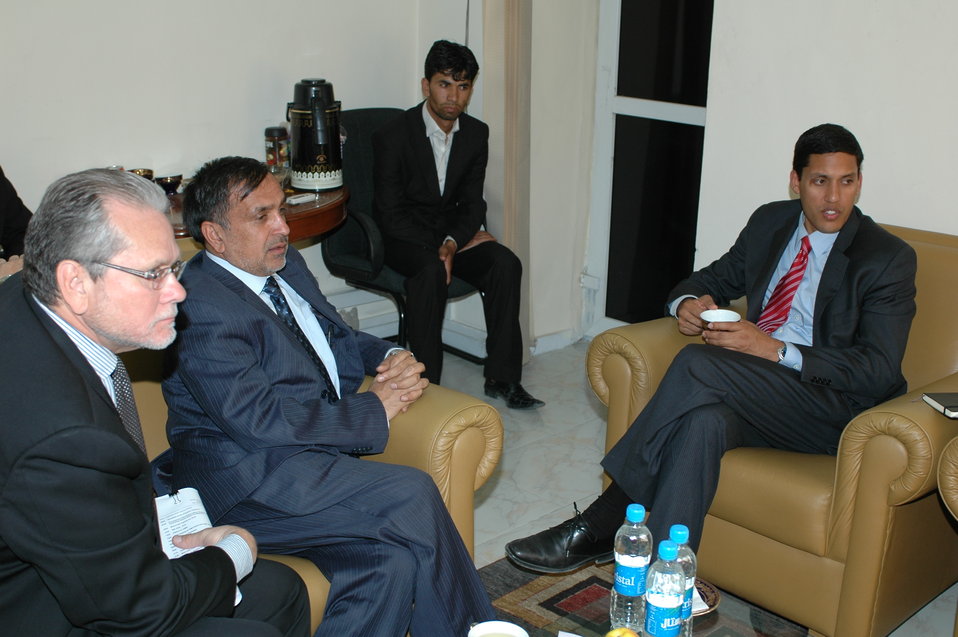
DDP MOU Preparation